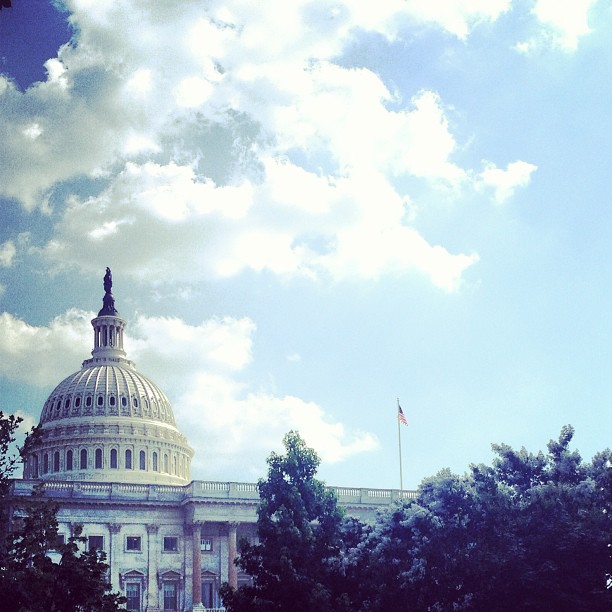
Capitol on a hot afternoon in #DC.